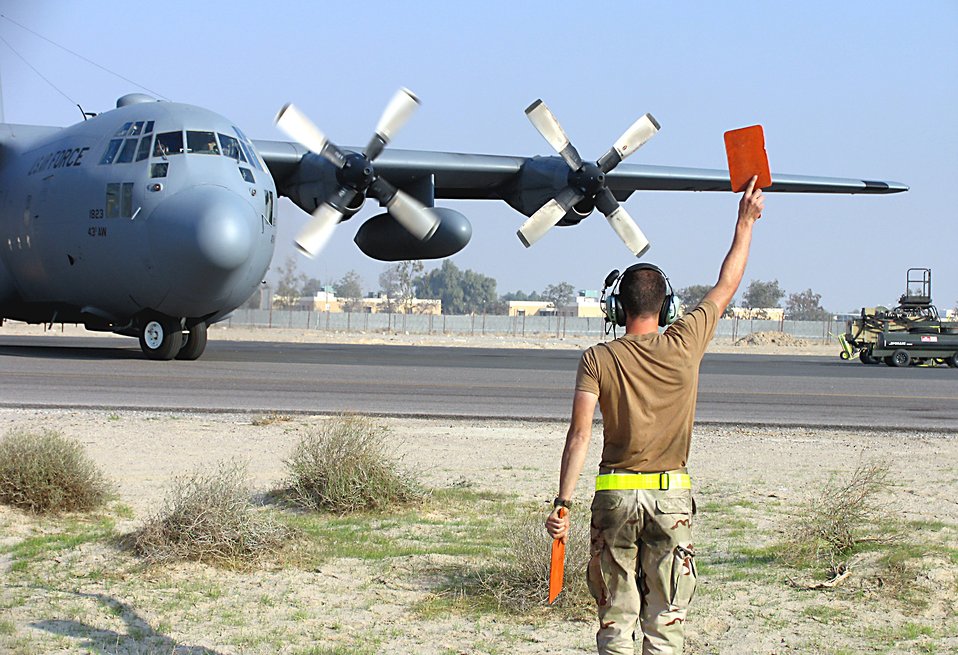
Maintainers keep aircraft flying

SOUTHWEST ASIA (AFPN) -- Senior Airman Johnathan Feucht marshals a C-130 Hercules before takeoff. Airman Feucht is with the 368th Expeditionary Aircraft Maintenance Squadron.